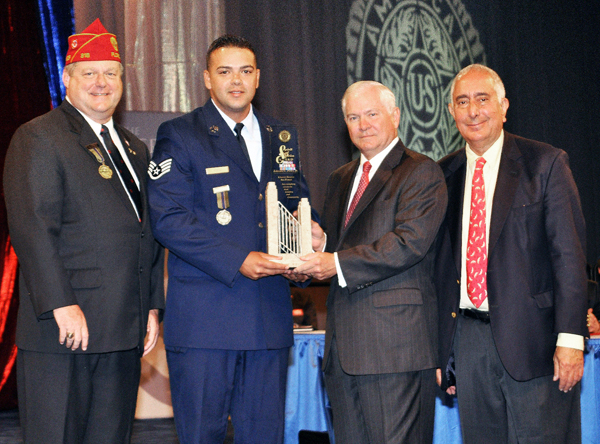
Spirit of Service Award

Staff Sgt. Edward L. Perez, Air Force recipient of the American Legion’s 2010 Spirit of Service Award, shares the moment with (from left) American Legion National Commander Clarence E. Hill, Secretary of Defense Robert Gates and actor-entertainer Ben Stein. Sergeant Perez, along with a member of each of the other services, received the award Aug. 31, 2010, at the organization's 92nd National Convention in Milwaukee, Wis.